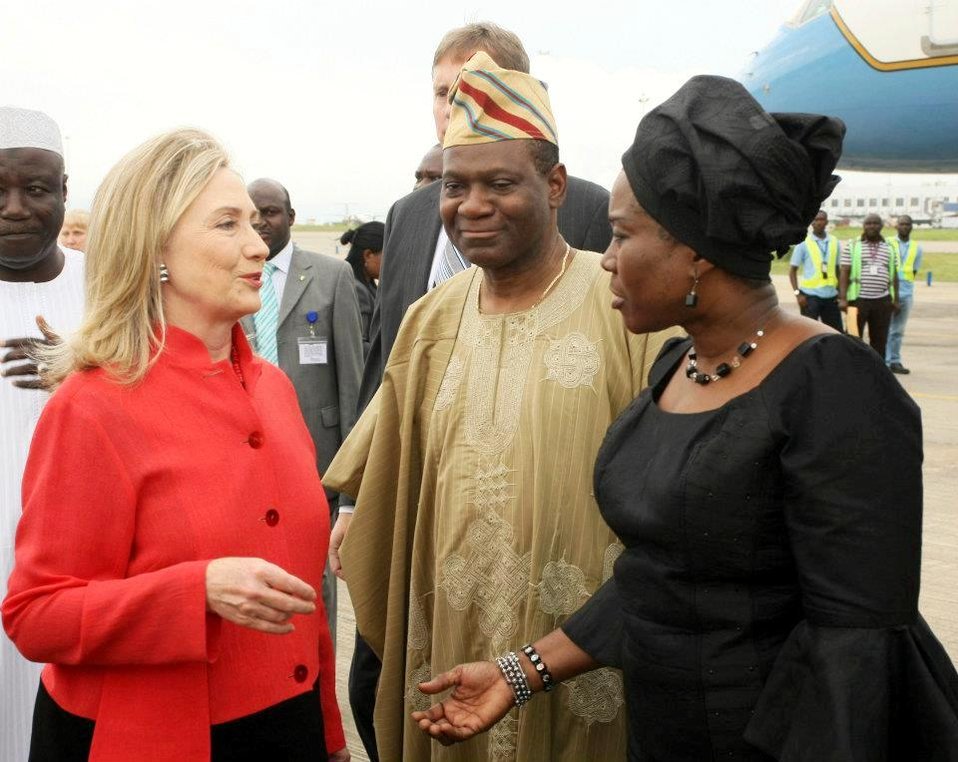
Secretary Clinton Is Greeted By Nigerian Ministers Ashiru and Onwuliri

U.S. Secretary of State Hillary Rodham Clinton is greeted by Nigerian Foreign Minister Olugbenga Ashiru, center, and Nigerian Minister of State for Foreign Affairs I Viola Onwuliri, right, upon her arrival to Abuja, Nigeria, on August 9, 2012.